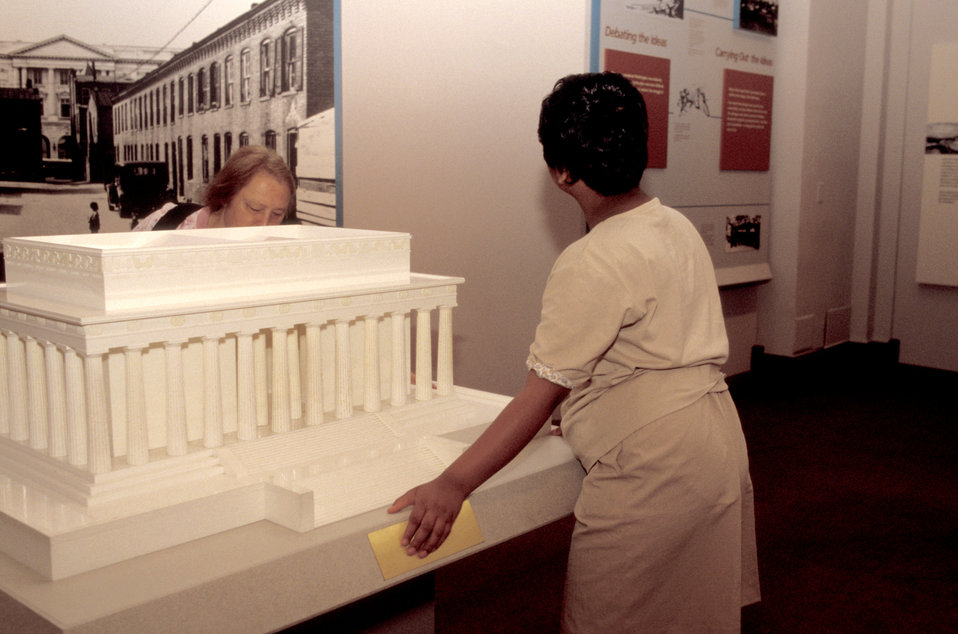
This was the first in a series of eight images (PHIL# 9088 - 9095) revealing the exhibits inside the U.S. National Building Museum, all of which could be touched by all visitors, including adults, children, and especially those who were mobility, or visually impaired. Consideration paid to those with such impairments during the designing of such a facility, enhanced the enjoyment experienced from all participants, as well as their overall learning experience. The exhibits were equipped with Braille descriptions, large print signs, and were mounted so that standing or seated users could both fully appreciate their experience. In this particular image, two women were interacting with a replica of the Lincoln Memorial. 'The Center for Universal Design (CUD) is a national research, information, and technical assistance center that evaluates, develops, and promotes accessible and universal design in housing, buildings, outdoor and urban settings and related products.'